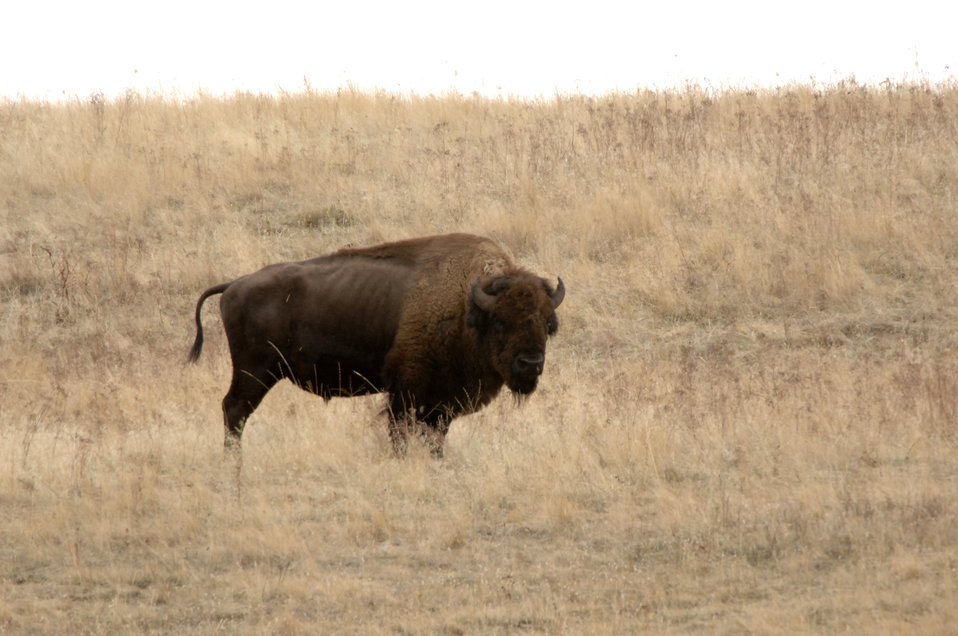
American bison graze in the National Bison Range Wildlife Refuge in Montana on November 17, 2007. The U.S. Fish and Wildlife Service administers this refuge as part of the National Wildlife Refuge System. The refuge was established in 1908 and is one of the oldest Wildlife Refuges in the nation and was established to support a population of American bison. There are approximately 350-500 American bison in the refuge.